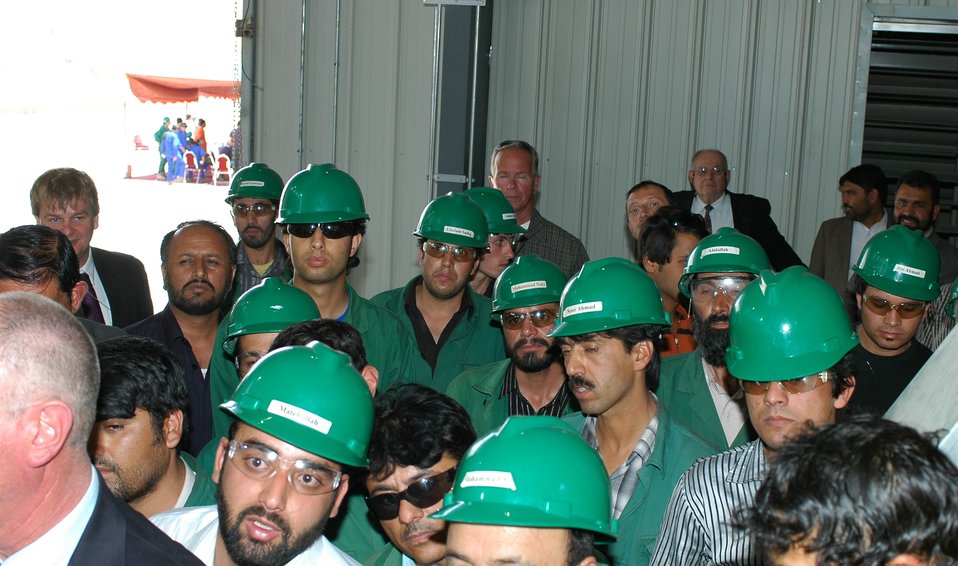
105 MW Tarakhil Power Plant Handover